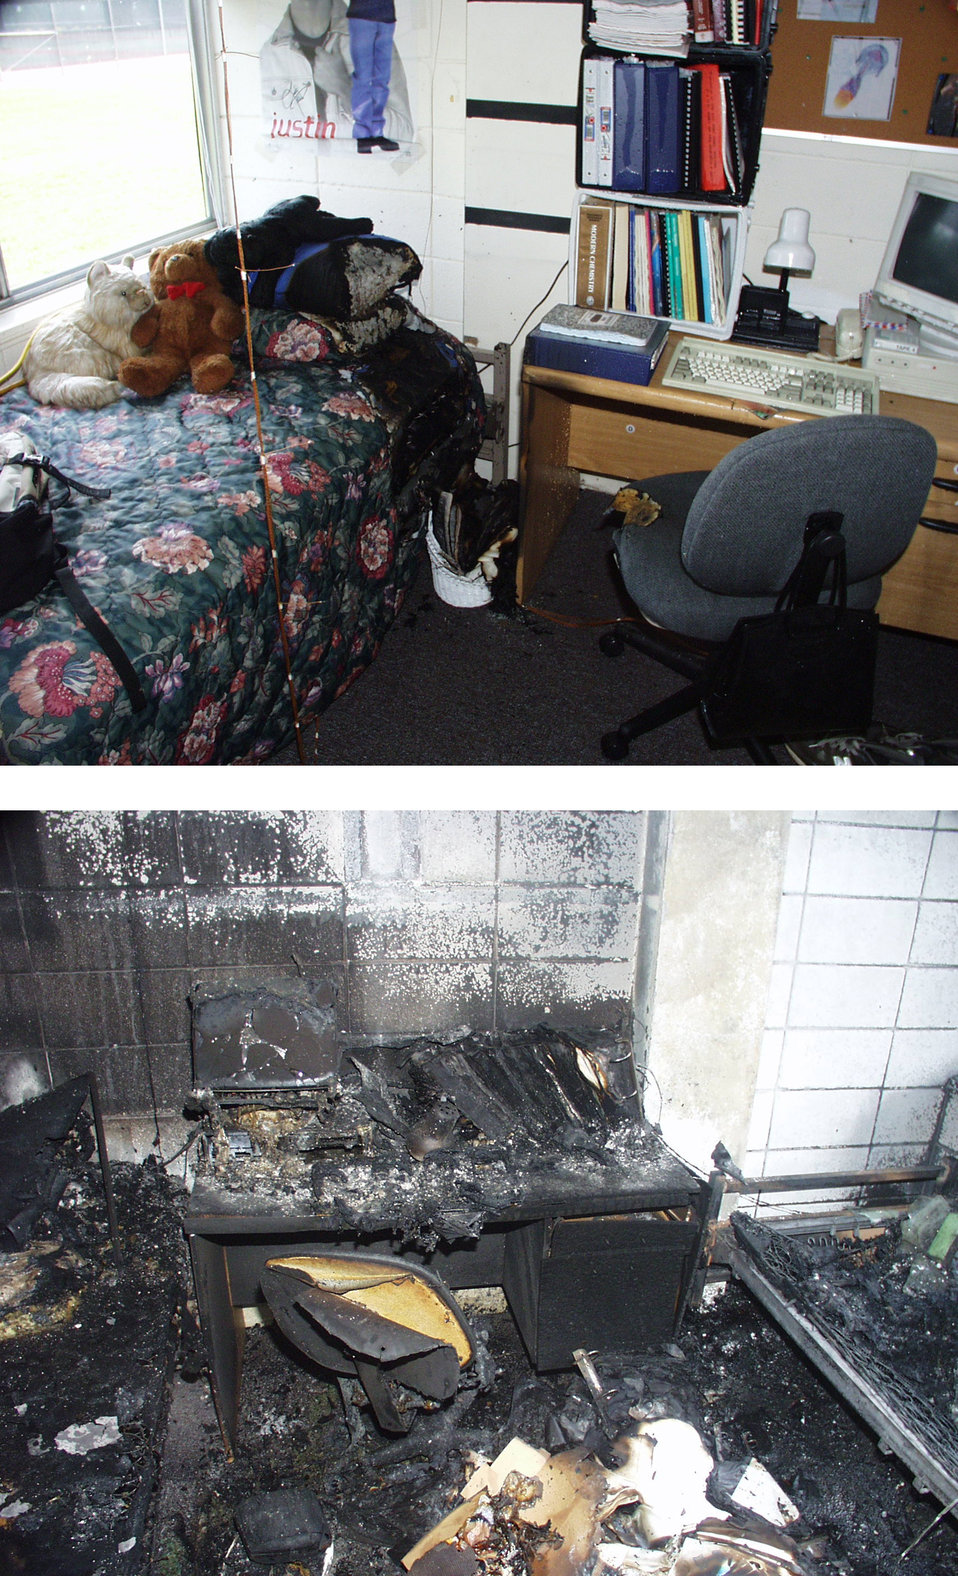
Smoke Alarms; Sprinklers; Closed Doors

These post-fire photographs of the dorm rooms show the difference a sprinkler makes. There is little visible damage the in the top photo that had a sprinkler in the room; there was no sprinkler in the dorm room in the lower picture.